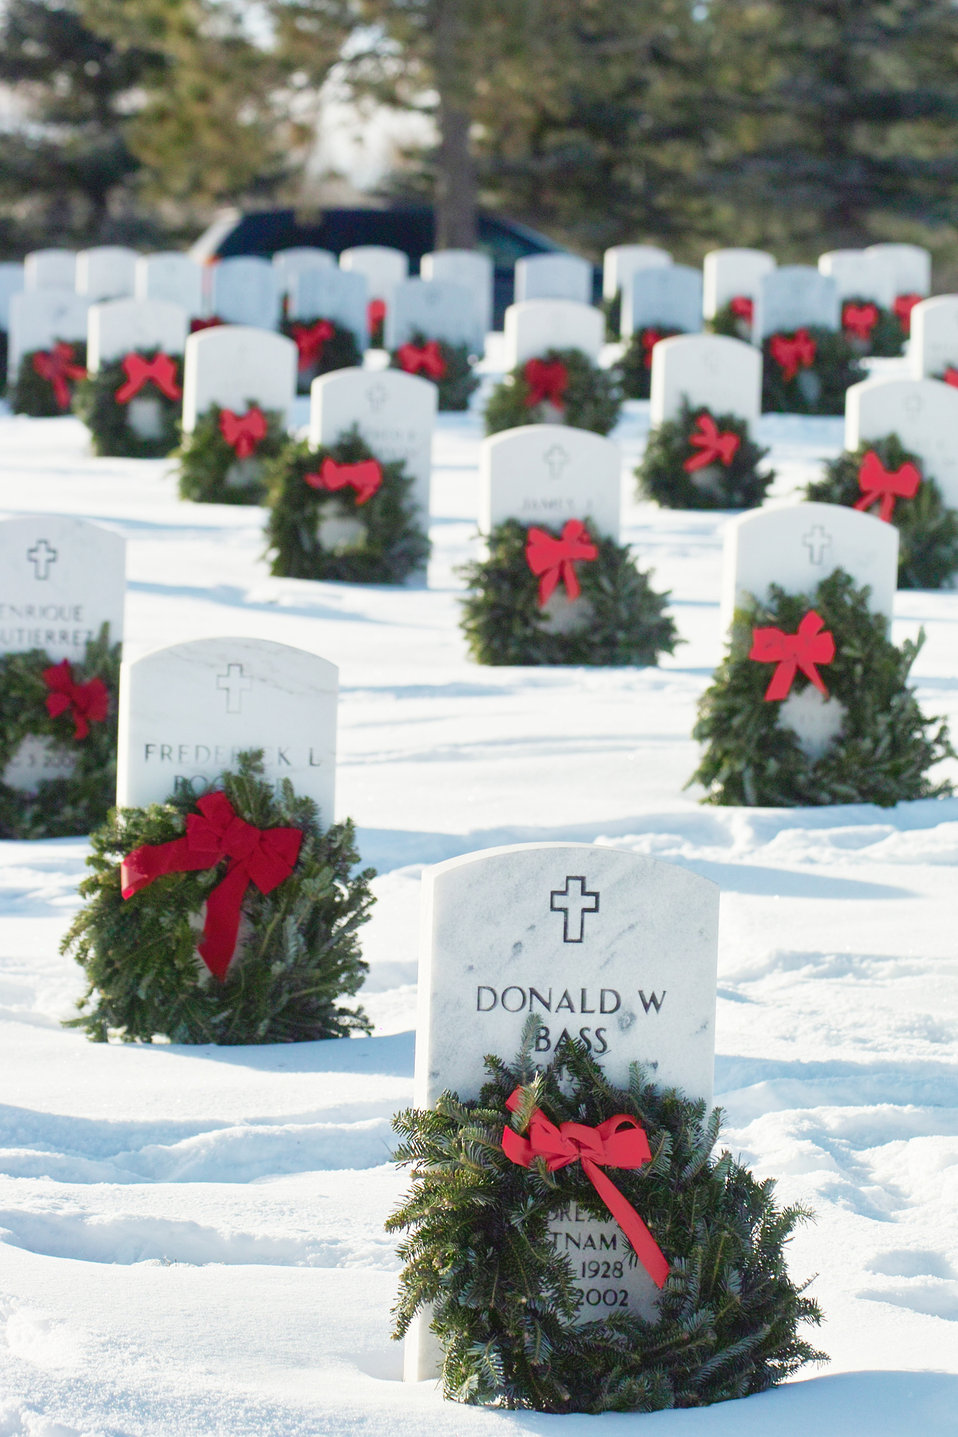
Honoring veterans

Wreaths adorn the graves of veterans during Wreaths Across America at Fort Logan National Cemetery in Littleton, Colo. Dec. 14, 2009. Eighty-seven volunteers from Buckley Air Force Base joined Civil Air Patrol members and volunteers from Schriever and Peterson air force bases and the Denver Metropolitan Area for a day of remembrance.